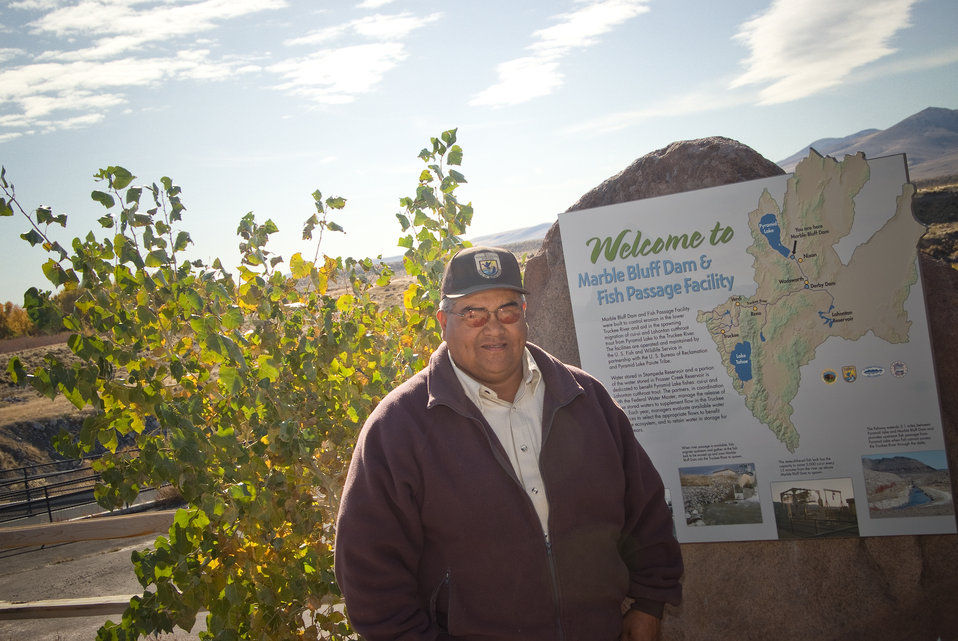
Roy Hicks, Tractor Operator with the Pah Rah Mountains and the Truckee River in the background

Marble Bluff USFWS Fish Facility.